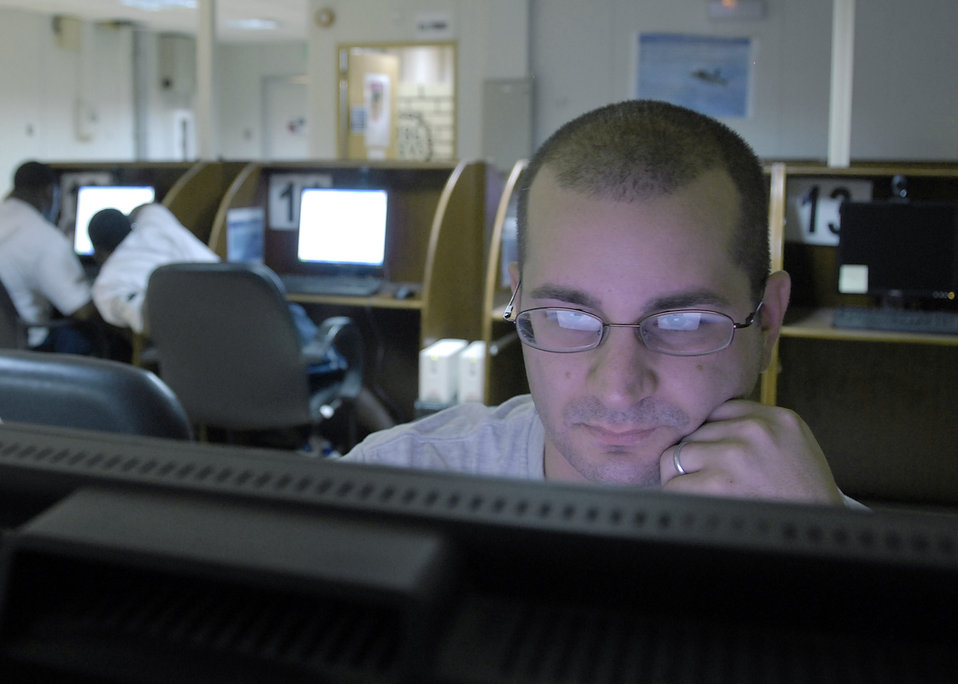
Staying connected

Staff Sgt. Brian DeRosa, who is deployed for the first time since his 17-month-old son was born, checks his personal e-mail account for a message from home June 6 at a base in Southwest Asia. Sergeant DeRosa is a C-17 Globemaster III loadmaster with the 817th Expeditionary Airlift Squadron and is deployed from Travis Air Force Base, Calif. The morale center offers a variety of ways for deployed members to stay in touch with their families.